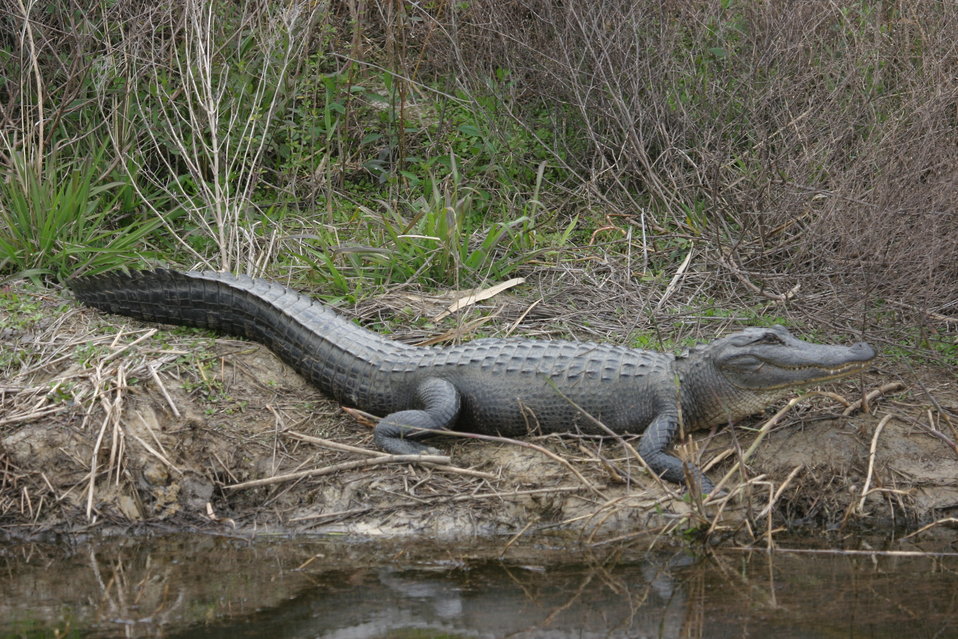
An alligator basking in the sun

An alligator basks in the sun at Lacassine Pool.